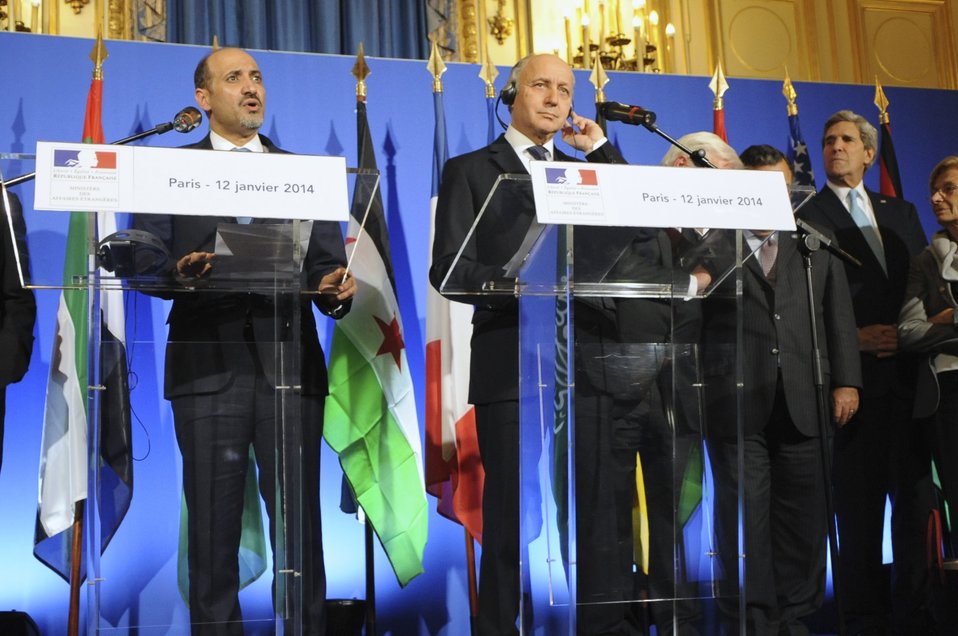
Secretary Kerry Listens as Syrian Opposition Council President al-Jarba Addresses Media

U.S. Secretary of State John Kerry listens as Syrian Opposition Council President Ahmad al-Jarba addresses the international media after a meeting of the London 11 group in Paris, France, on January 12, 2014.